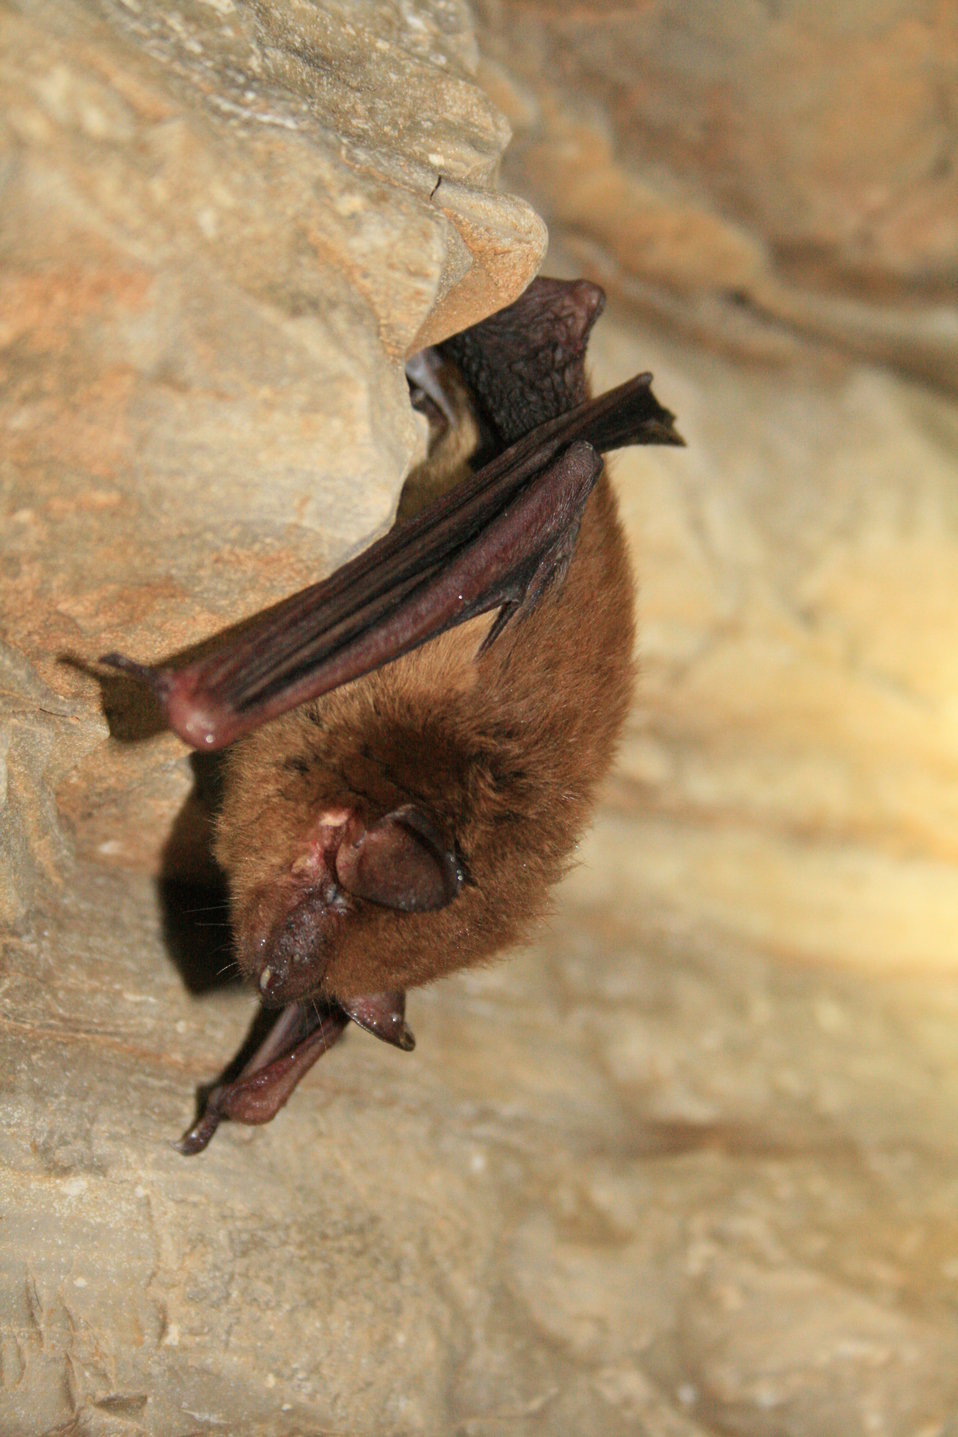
healthy hibernating big brown bat

Eptesicus fuscus